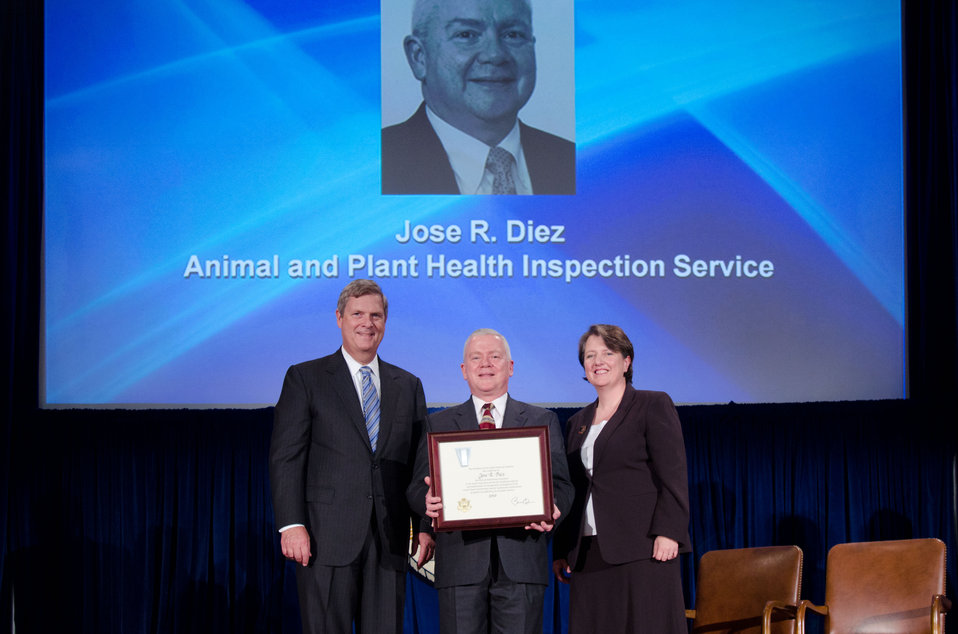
Agriculture Secretary Tom Vilsack (l) and Deputy Secretary Kathleen Merrigan (r), presents the Meritorious Executive Award to Jose R. Diez, Associate Deputy Administrator Veterinarian Service, Emergency Programs, Animal and Plant Health Inspection Service. The President of the United States of America has conferred on Jose R. Diez the rank of Meritorious Executive in the Senior Executive Service for sustained extraordinary accomplishment in management of programs of the United States Government and for leadership exemplifying the highest standards of service to the public reflecting credit o the career civil service. On Wednesday, September 14, 2011 in the Jefferson Auditorium at the US Department of Agriculture in Washington, DC.